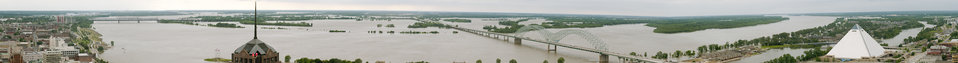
Virtual panorama, photographed within five-minute period, shows an aerial view of Mississippi River floodwater in Memphis, TN, on Saturday, May 14. 2011. Floodwater crested here a few days before, effecting Arkansas and Tennessee.